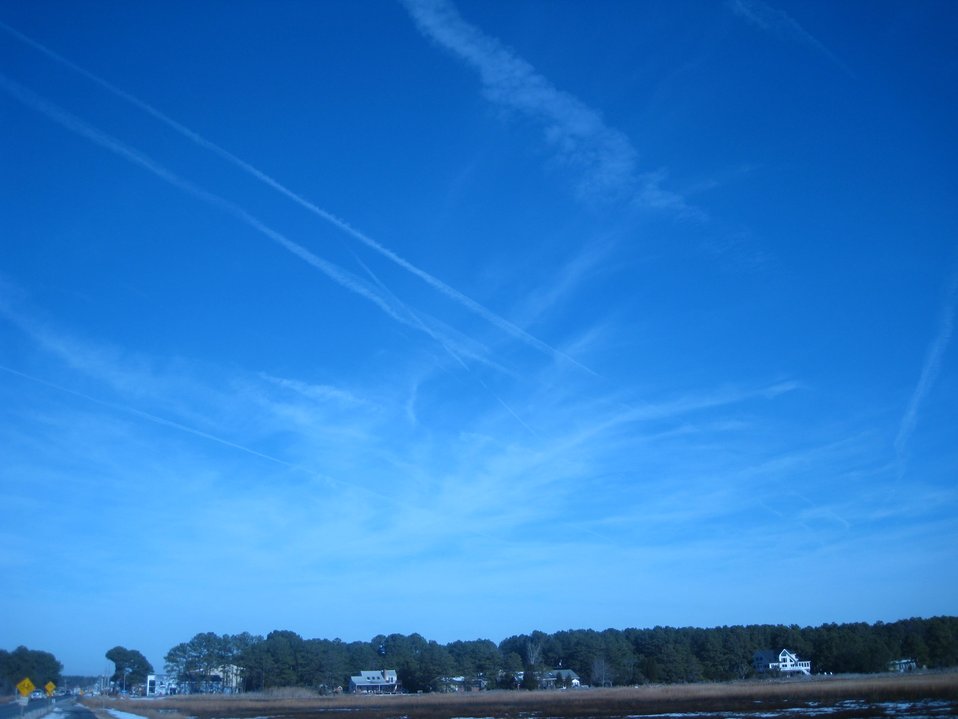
Giving new meaning to the East Coast flyway. Aircraft contrails over Chincoteague Island.